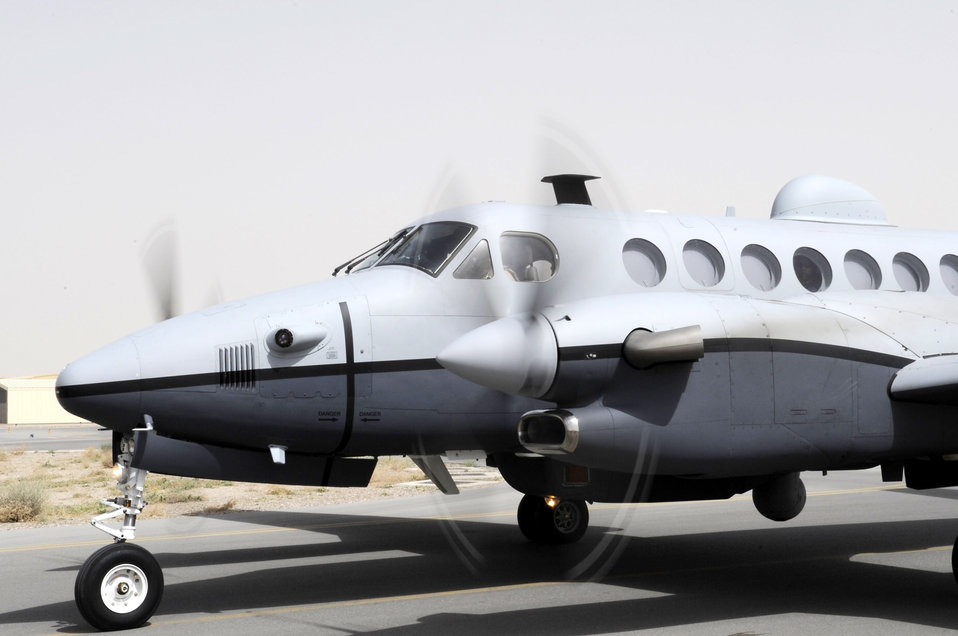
New ISR unit activated at Kandahar Airfield

The MC-12 Liberty aircraft is a manned, special-mission turboprop aircraft designed for intelligence, surveillance and reconnaissance missions. The 361st ERS was activated May 1, 2010, at Kandahar Airfield, Afghanistan. The MC-12 is assigned to the 361st Expeditionary Reconnaissance Squadron.